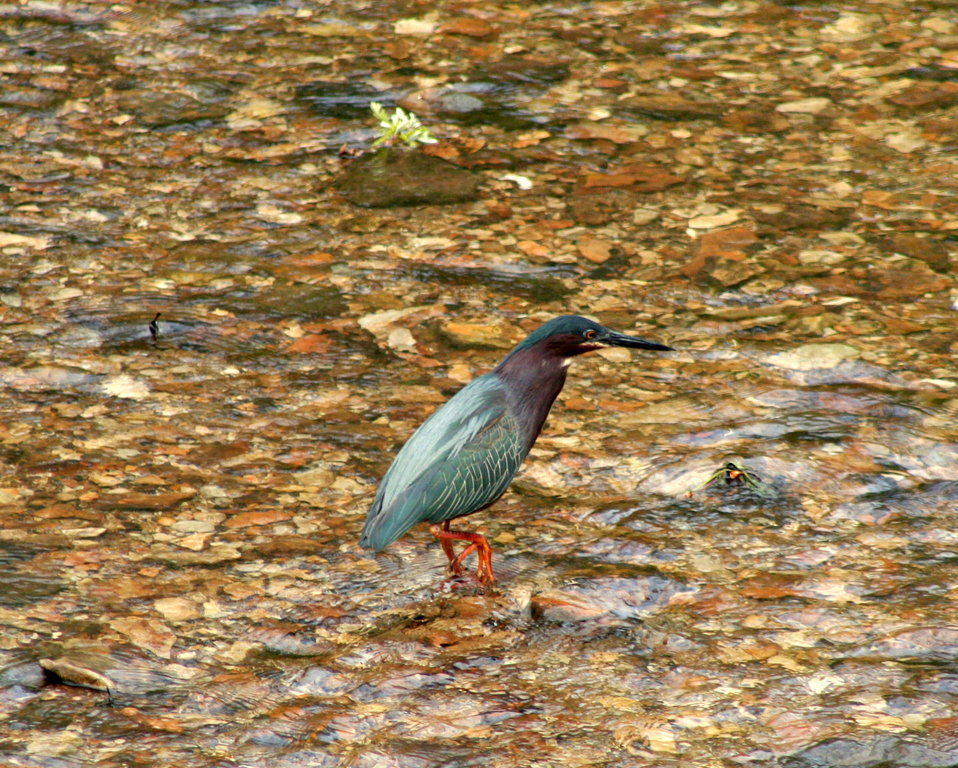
Green heron in Columbia, Missouri.